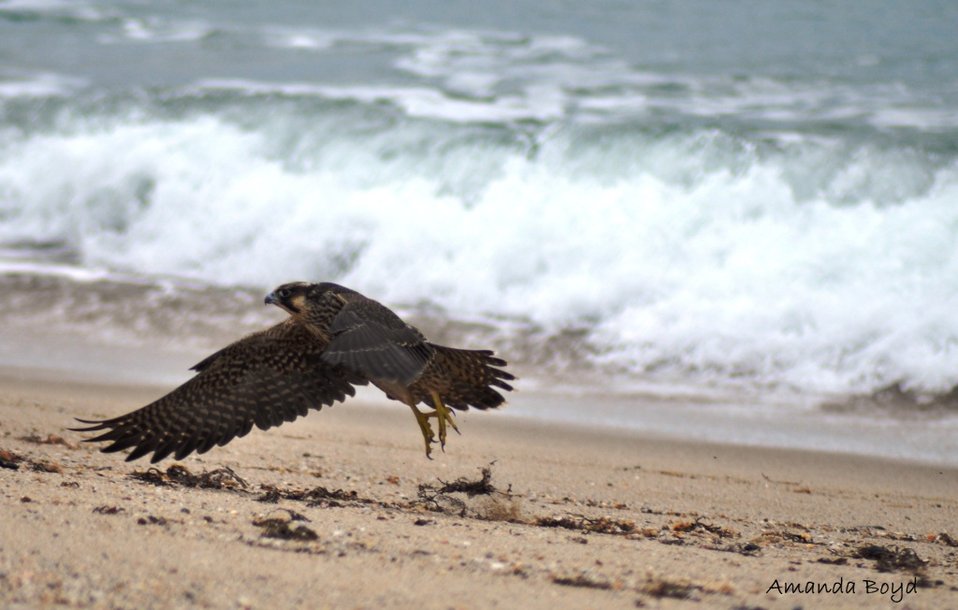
peregrine falcon

Nantucket National Wildlife Refuge